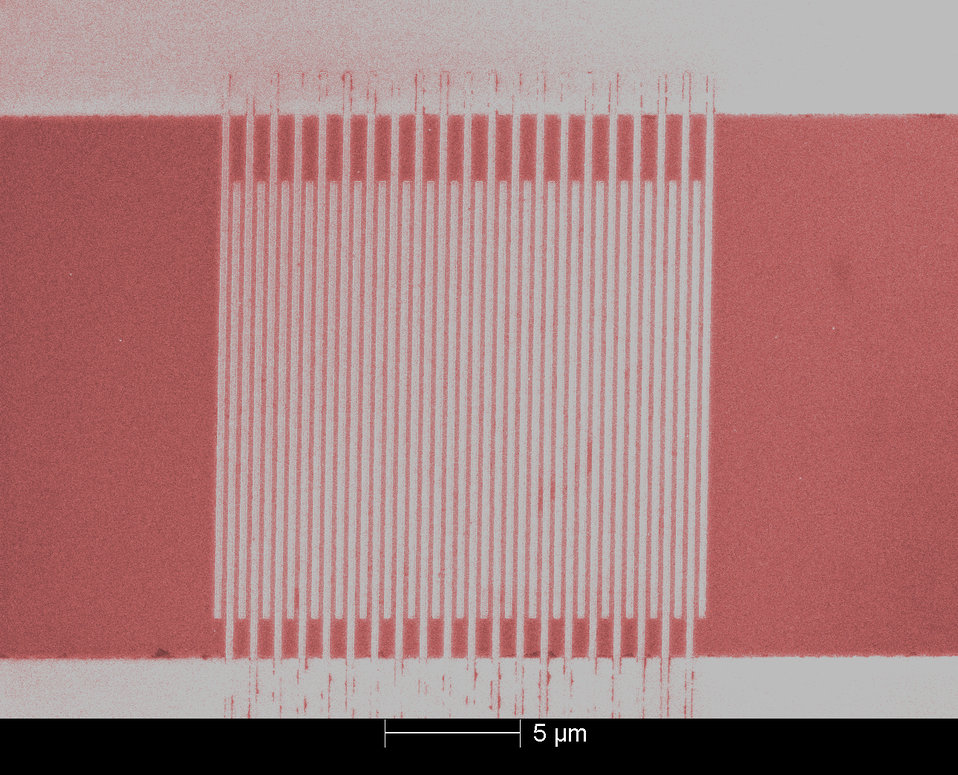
Ultrafast Single-Photon Detector

Colorized micrograph of an ultrafast single-photon detector made of superconducting nanowires. NIST researchers use electron beam lithography to pattern the nanowires (vertical lines) on a thin film of tungsten-silicon alloy, which produces more reliable signals than the niobium nitride material used previously.

For more information see the NIST Tech Beat story.